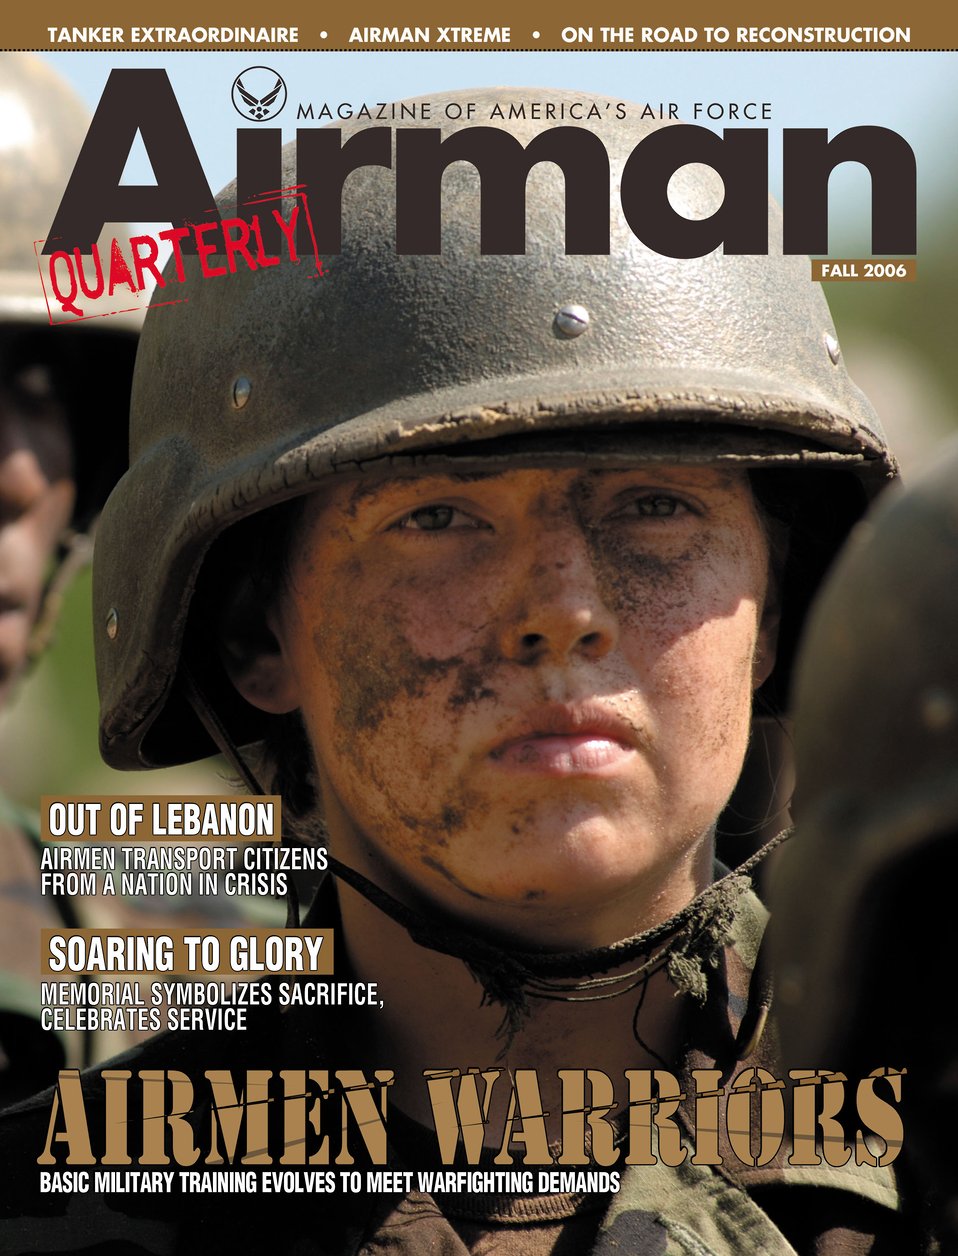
Airman Magazine Fall 2006.